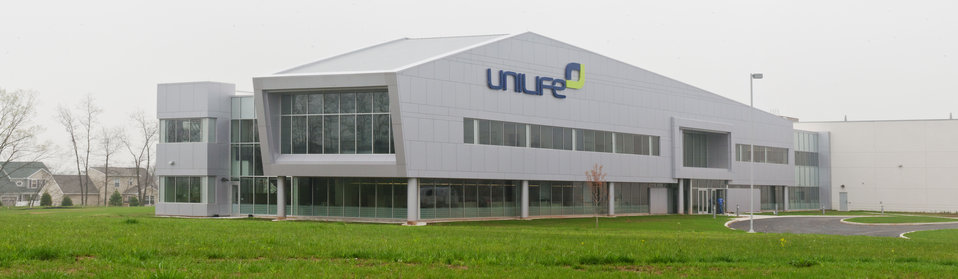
(Virtual panorama, best viewed with largest download) Unilife is a medical device company focused on the design, development, manufacture and supply of a proprietary range of retractable syringes on Monday, April 20, 2011 in York, PA. In partnership with Sanofi-aventis, Mikron Group, and MDMA, U.S. Department of Agriculture Rural Development was able to guarantee $18,000,000 through its Business and Industry Guaranteed Loan Program to construct a custom-built, global headquarters and commercial production facility in York, Pennsylvania. The 165,000 sq. ft. facility was completed in late 2010 and can accommodate future growth as well as the Company’s projected demand from pharmaceutical and healthcare companies for its proprietary range of Unifill ready-to-fill (prefilled) and Unitract general purpose safety syringes. Stage one of the facility is designed to accommodate the production of up to 400 million Unilife syringes per year and to meet stringent pharmaceutical standards for primary drug containers. Adjacent to the manufacturing facility is Unilife’s global headquarters (grey exterior) that support administrative, marketing, new product development, quality laboratories and other operational functions. Unilife, which first arrived in Pennsylvania in 2006. The company has doubled its employees for the past three years. There are approximately 150 employees, and they expect to double the number by 2015.